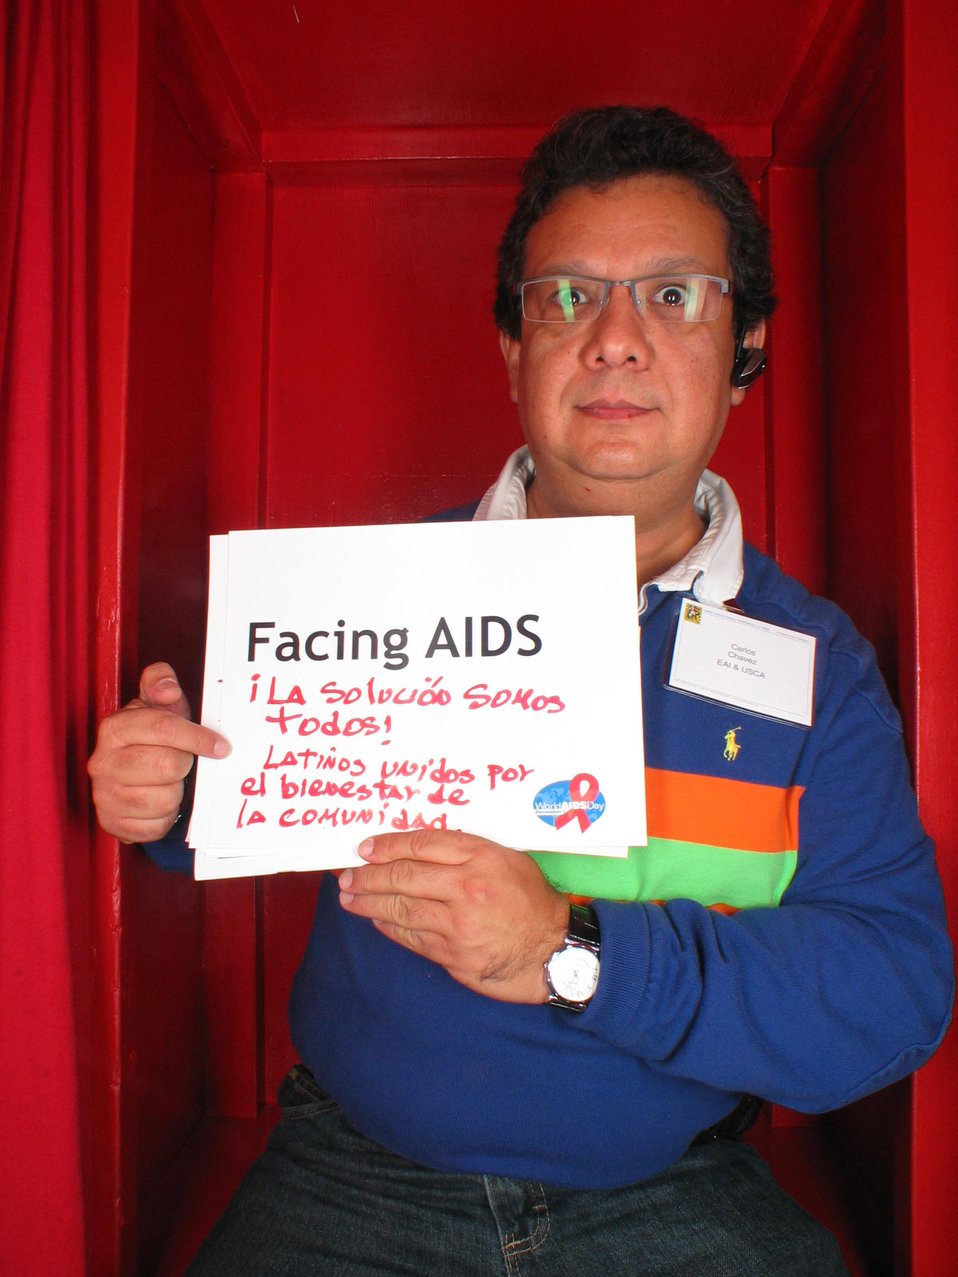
Facing AIDS La solicioo somos todos. Latinos unidos por el bienestar de la comunidad.